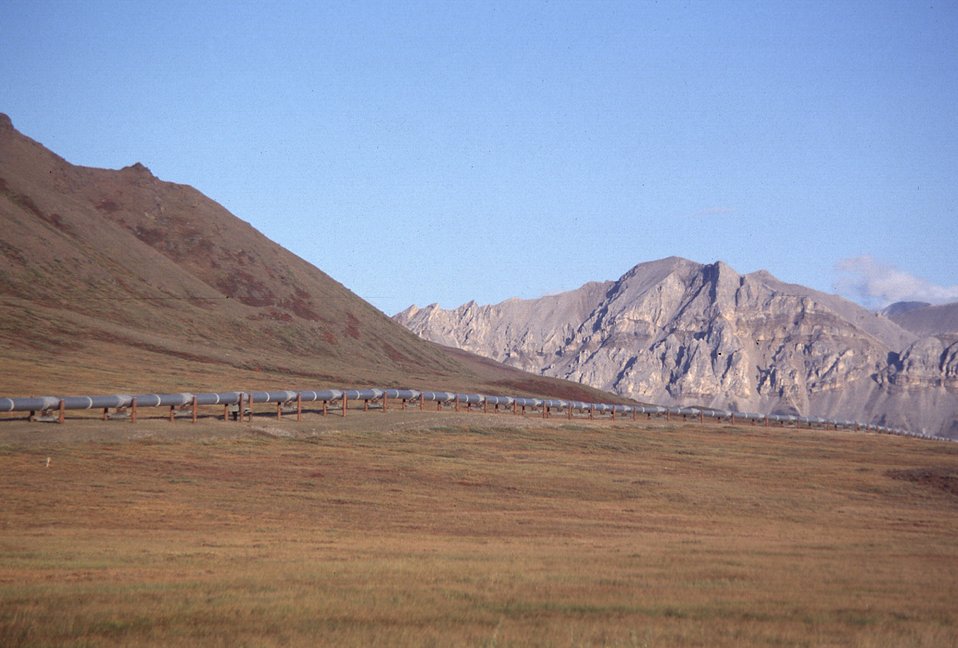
Trans-Alaska Pipeline, Dalton Highway